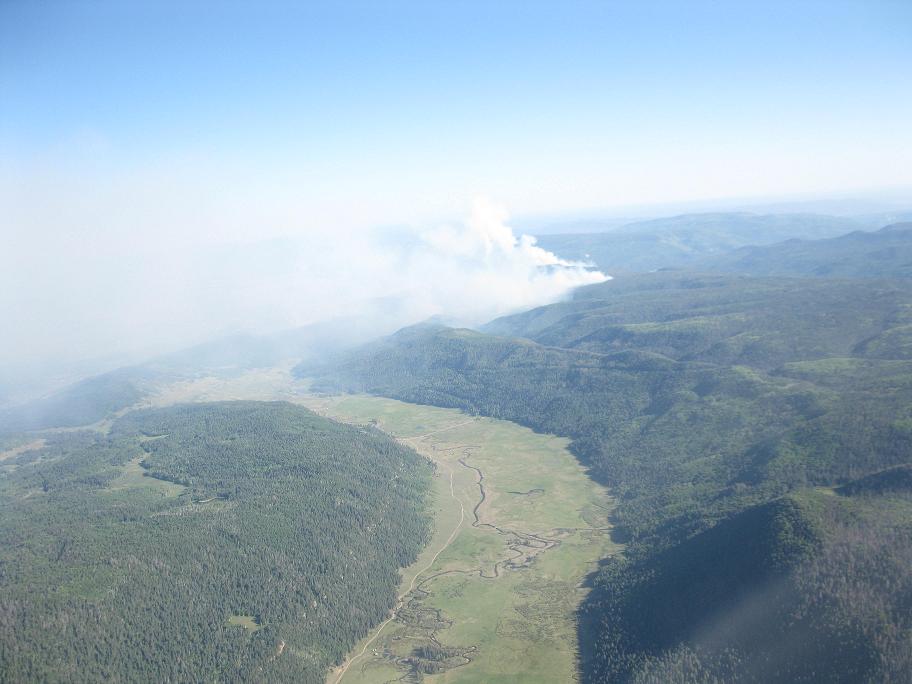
An airtanker flies towards the Little Sand Wildfire in the San Juan National Forest near Pagosa Springs, CO, to drop water on Tuesday, May 29, 2012. The wildfire was started by a lightening strike on May 13, 2012. The fire is in rugged and inaccessible terrain, north of the Piedra River, and is currently estimated at 14,224 acres with 30% containment as of June 20, 2012.